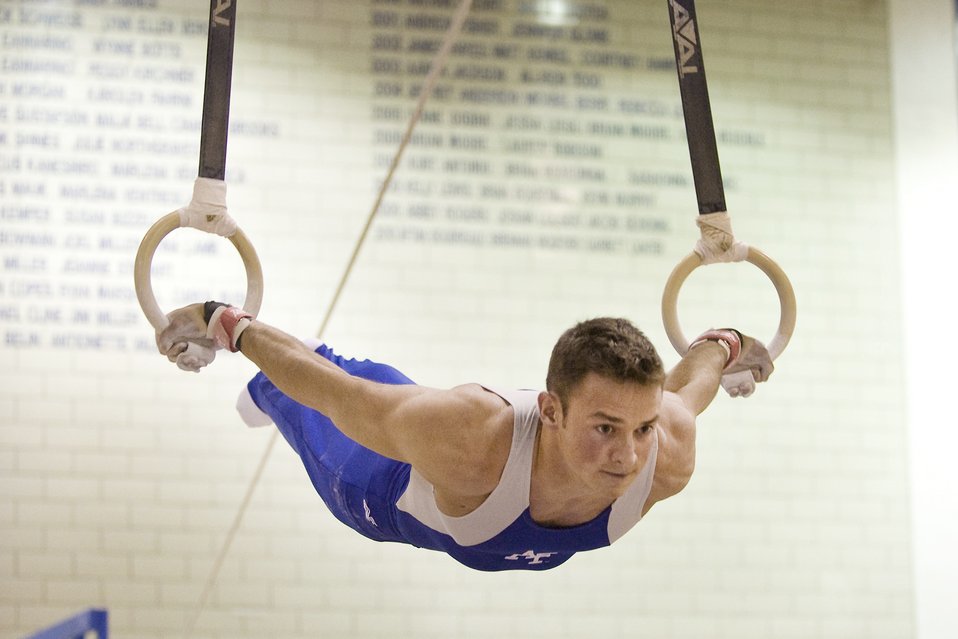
Falcons open season with Rocky Mountain event

Cadet junior Nash Mills performs on the rings during the Rocky Mountain Open meet held in the field house at the U. S. Air Force Academy, Colo., Jan. 16, 2010. Nash was the Falcons' top finisher on a pair of events, leading to a sixth-place finish in the all around (80.450). Mills tied for fifth on the vault with a score of 15.700, while placing sixth on the parallel bars at 13.950.